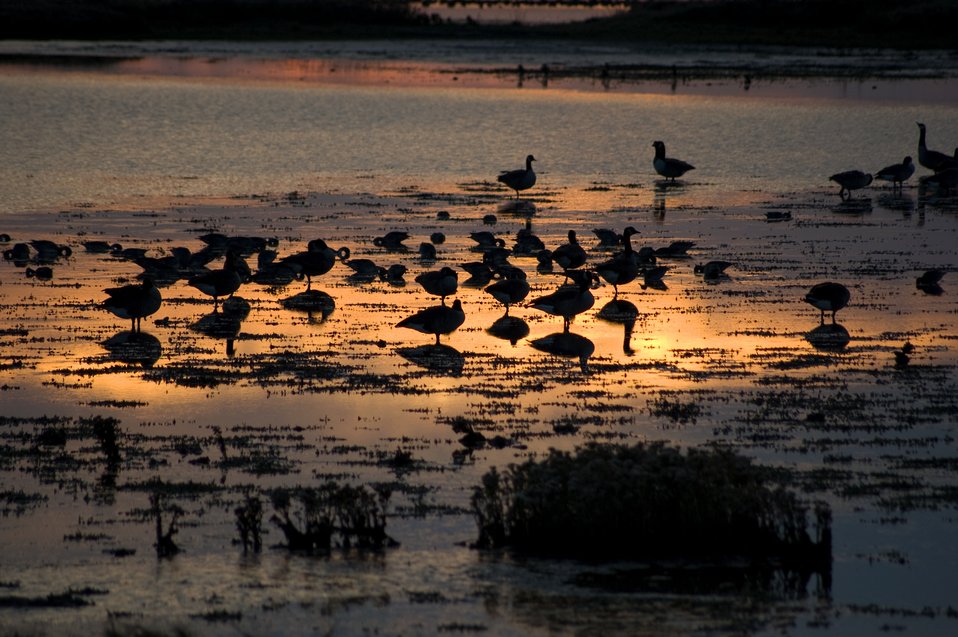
Birds at Sunset

A view of various birds at sunset.